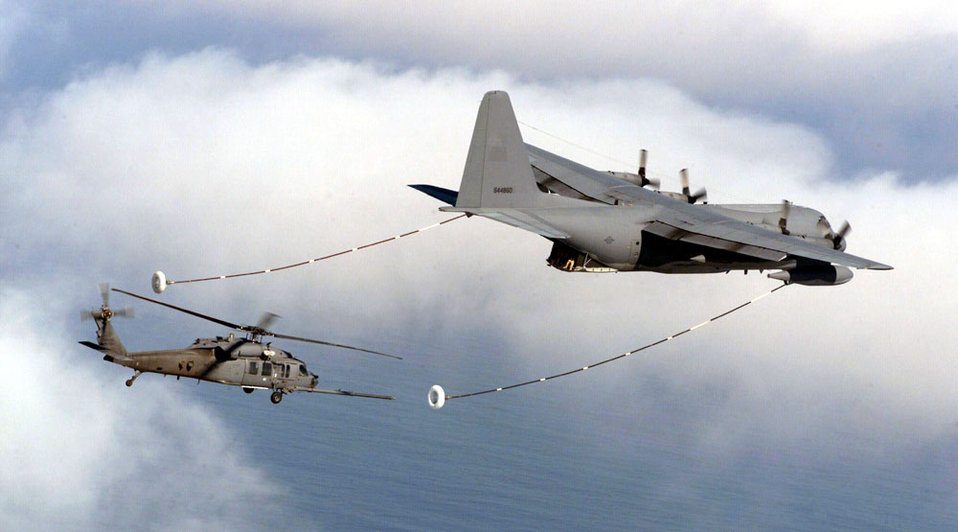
Water world

OVER THE PACIFIC OCEAN -- A 55th Rescue Squadron HH-60 Pave Hawk pilot moves in to refuel from an MC-130P Combat Shadow during water rescue training Sept. 13 among the 55th, 79th and 48th Rescue Squadrons from Davis-Monthan Air Force Base, Ariz.